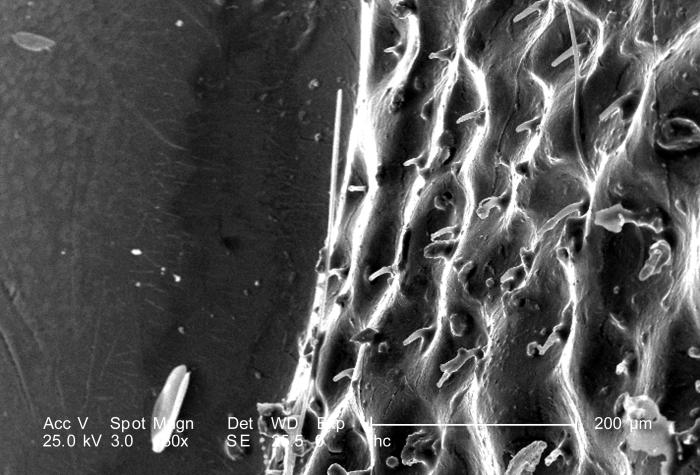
At a magnification of 130X, this scanning electron micrograph (SEM) focused on the head region of an adult 'figeater' beetle, Cotinis mutabilis. In this particular view, the transitional area between one of the insect's two compound eyes, i.e., right eye, and the vertex of its head is visualized. For even greater magnifications of the surface of the eye, see PHIL 9950, 9951, and 9952.